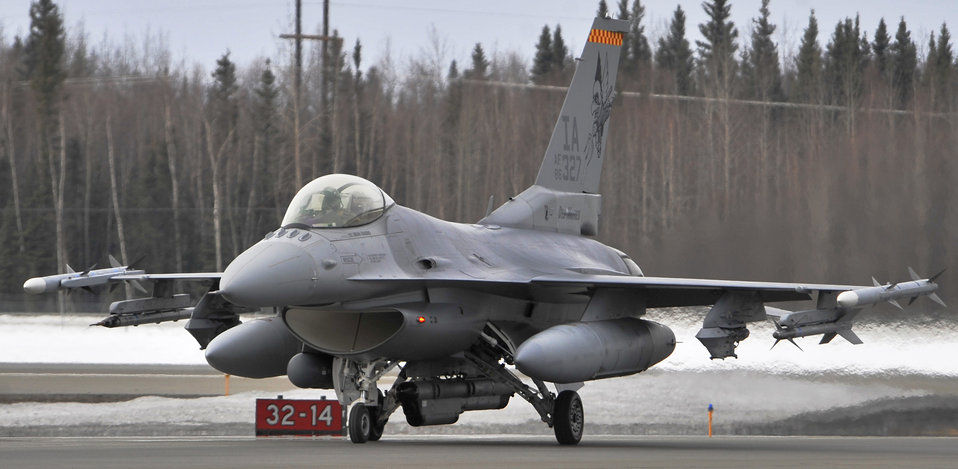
Making it happen: RF-A Maintainers

An F-16 Fighting Falcon from the Iowa Air National Guard's 132nd Fighter Wing in Des Moines returns to Eielson Air Force Base, Alaska, from a familiarization flight April 17 during Red Flag-Alaska. Red Flag-Alaska is a Pacific Air Forces-directed field training exercise for U.S. and coalition forces who fly under simulated air-combat conditions.